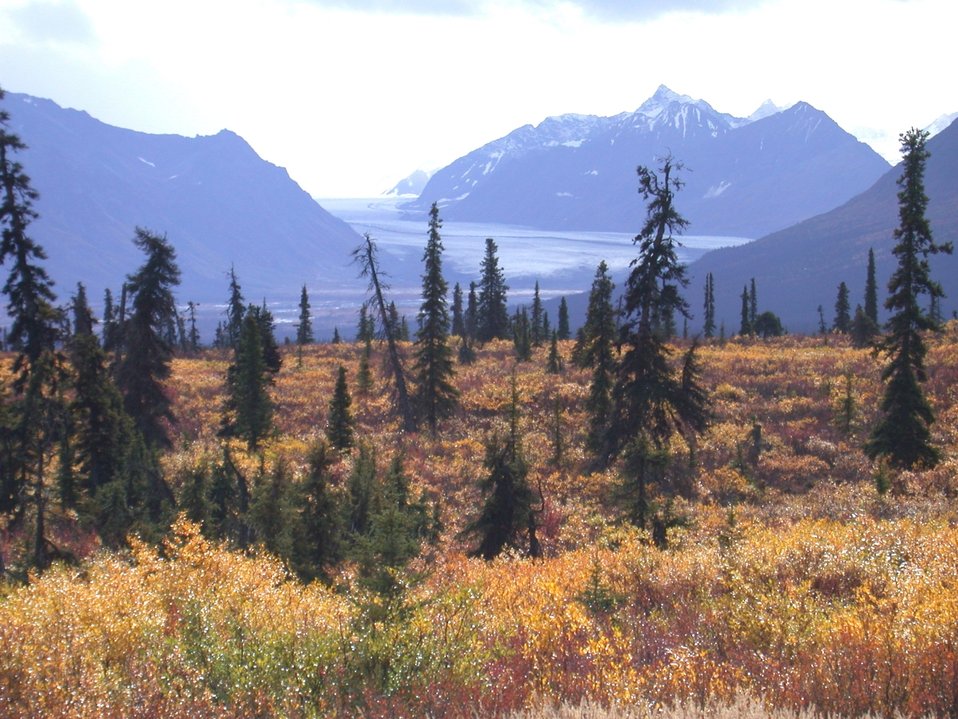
Looking up a glacial valley from near the treeline north of Anchorage.